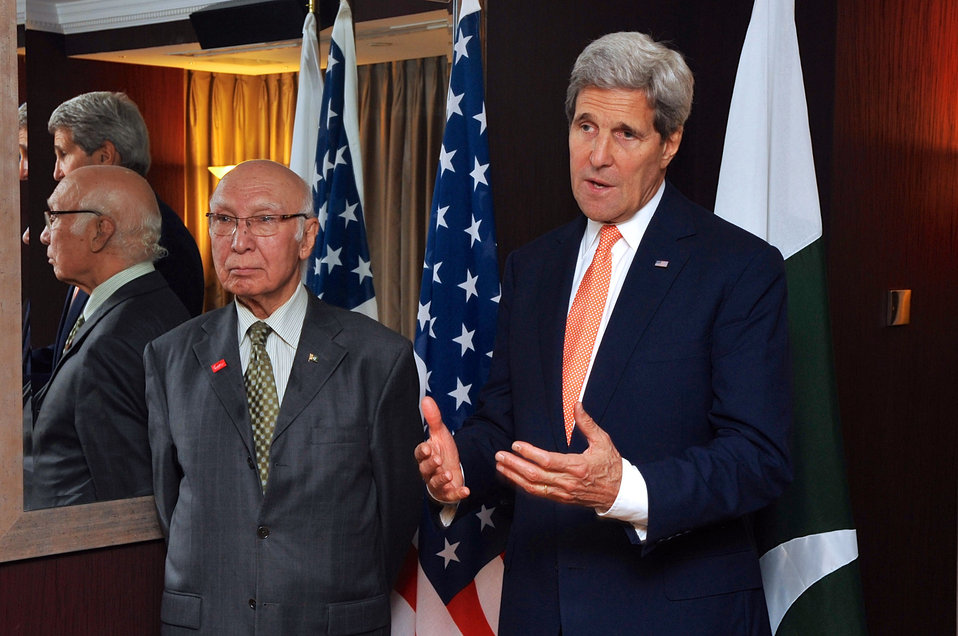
Secretary Kerry Meets with Pakistani National Security Adviser Aziz in London

U.S. Secretary of State John Kerry addresses reporters at the outset of a bilateral meeting with Pakistani National Security and Foreign Affairs Adviser Sartaj Aziz in London, UK, on June 13, 2014.